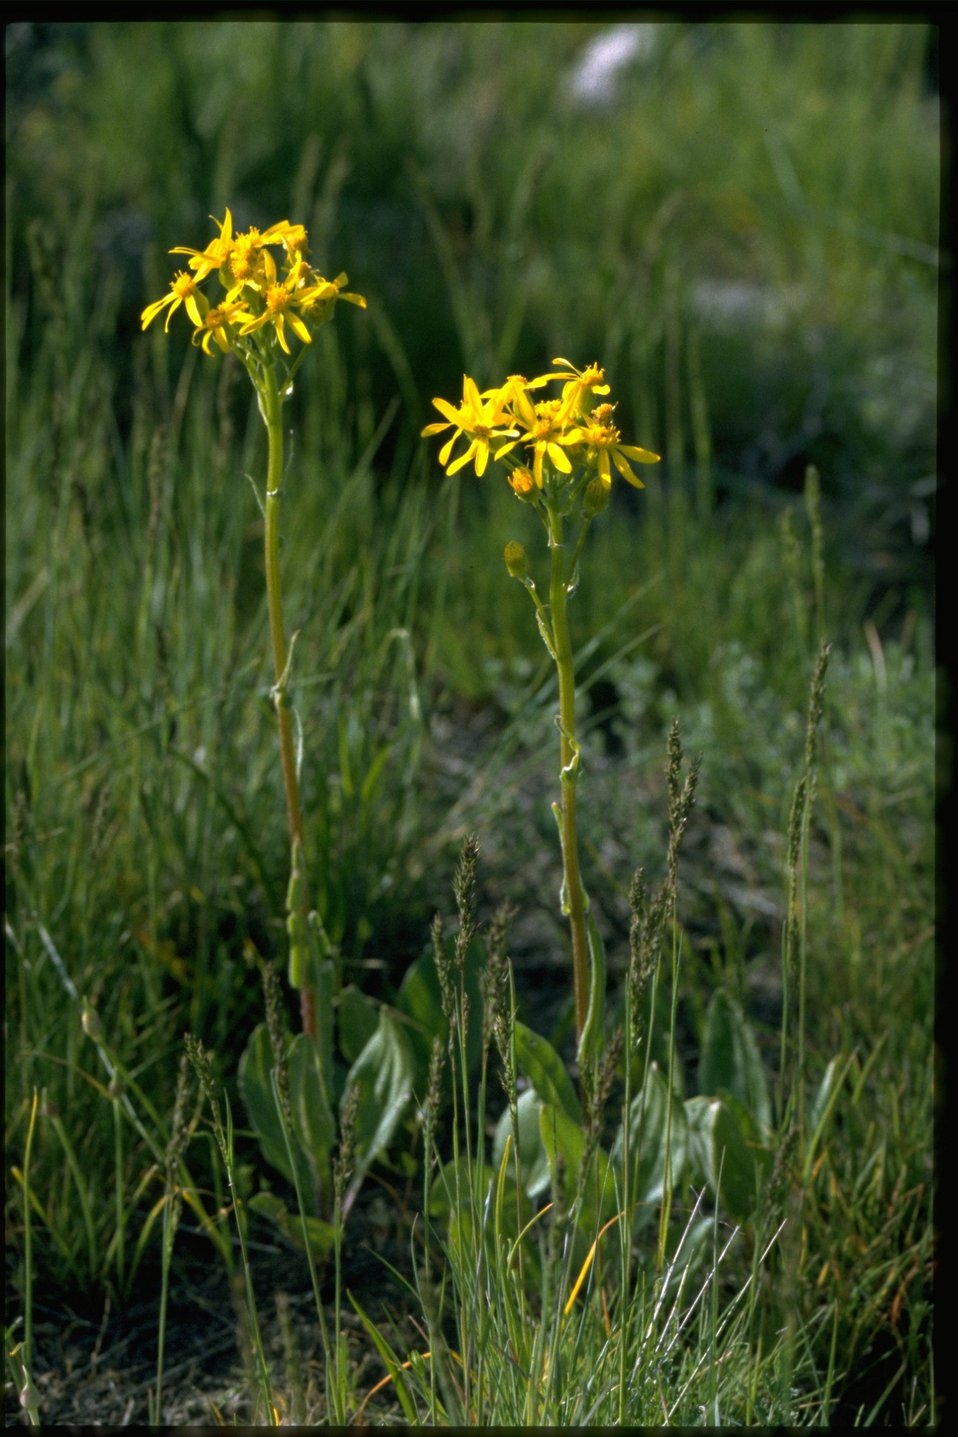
Medium shot of tall Western Groundsel, Senecio Integerrimus, wildflower.